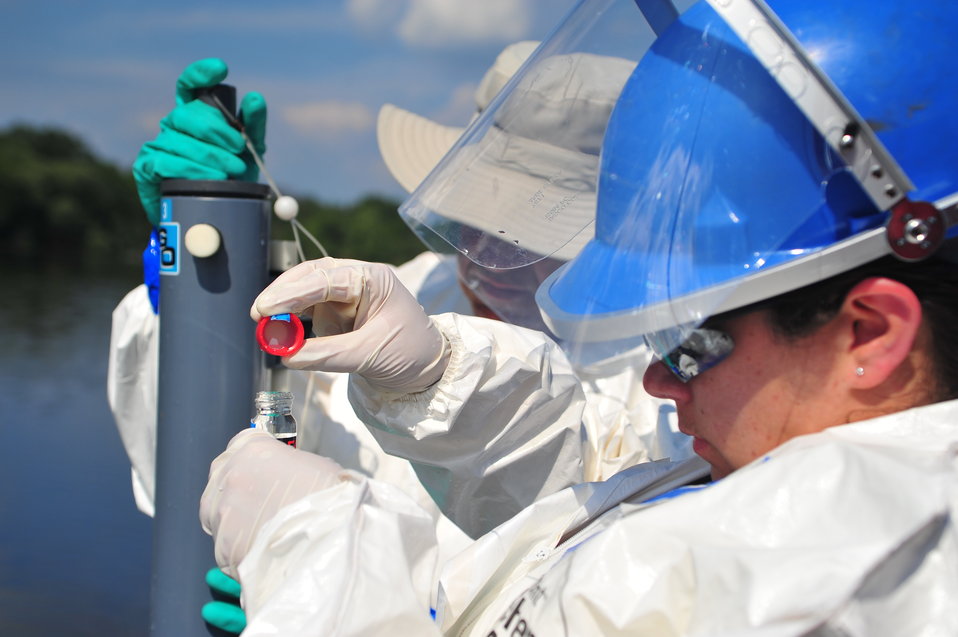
EPA's response to the Enbridge oil spill

August 2, 2010 - Water and sediment sampling operations during Enbridge Spill Response on Morrow Lake near Battle Creek, Michigan from Mudpuppy II, EPA's news research vessel.